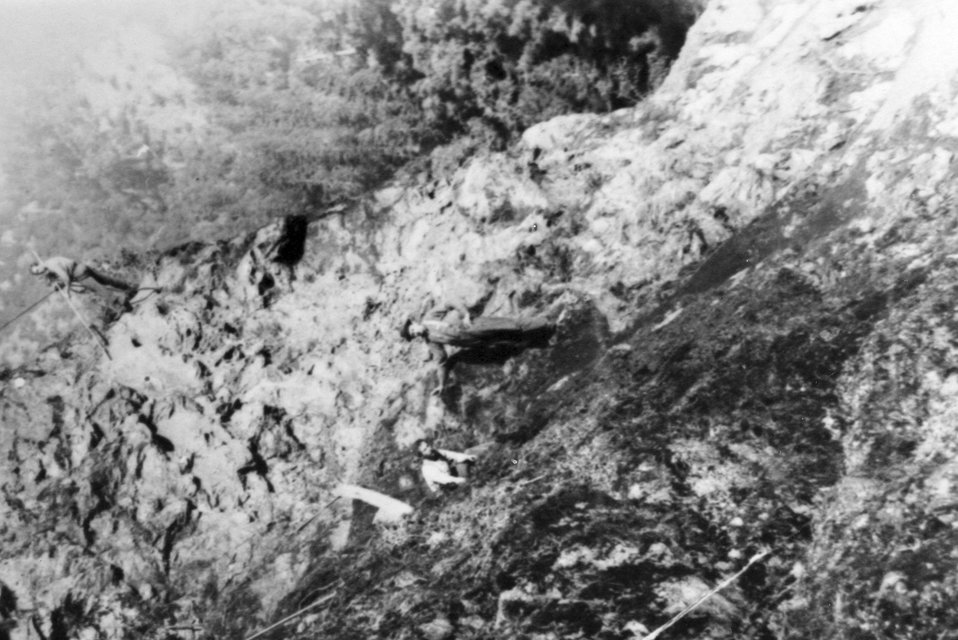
Building the Rogue River Trail at Devil's Back Bone.